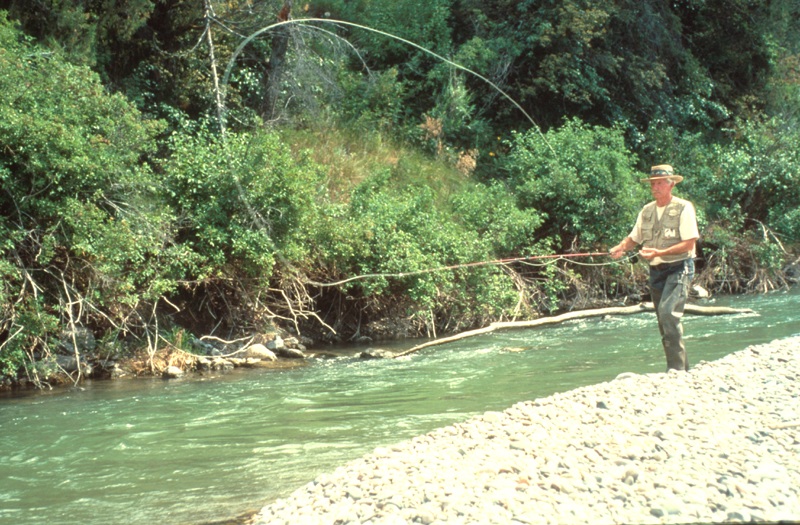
South Fork of the Snake River